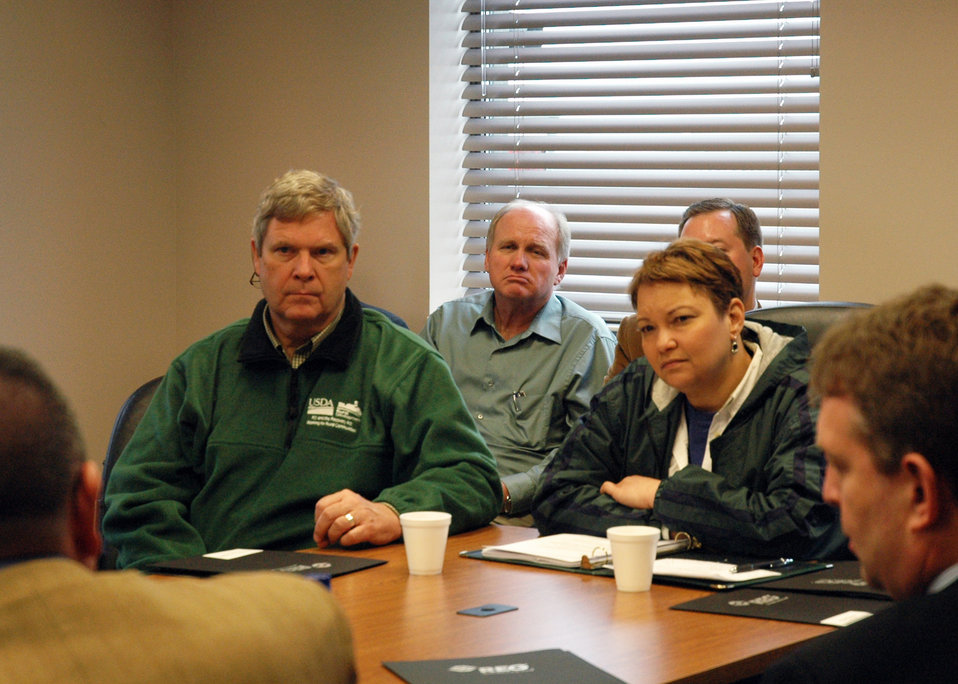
Agriculture Secretary Tom Vilsack,and Enviornmental Protection Agency Administrator Lisa P. Jaskson listening to concerns from the members of the ethanol and biomass industry during a meeting in Iowa, on Tuesday, April 19, 2011.